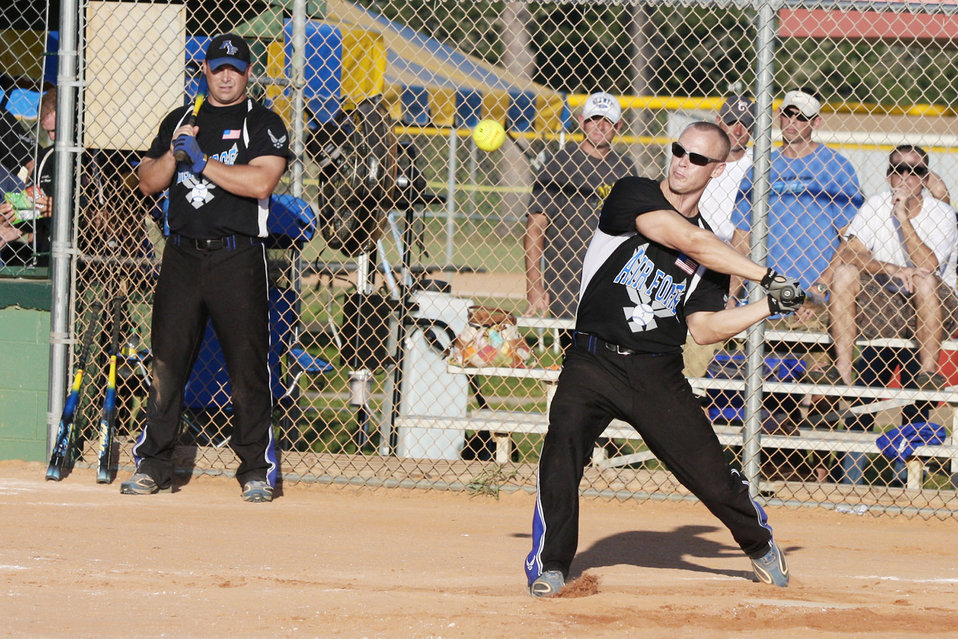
Air Force teams earn gold medals at armed forces softball championships

Nellis Myers gets a base hit during the Armed Forces Softball Championships. The Air Force men's and women's softball teams earned gold medals at the event. Myers is from Nellis Air Force Base, Nev.